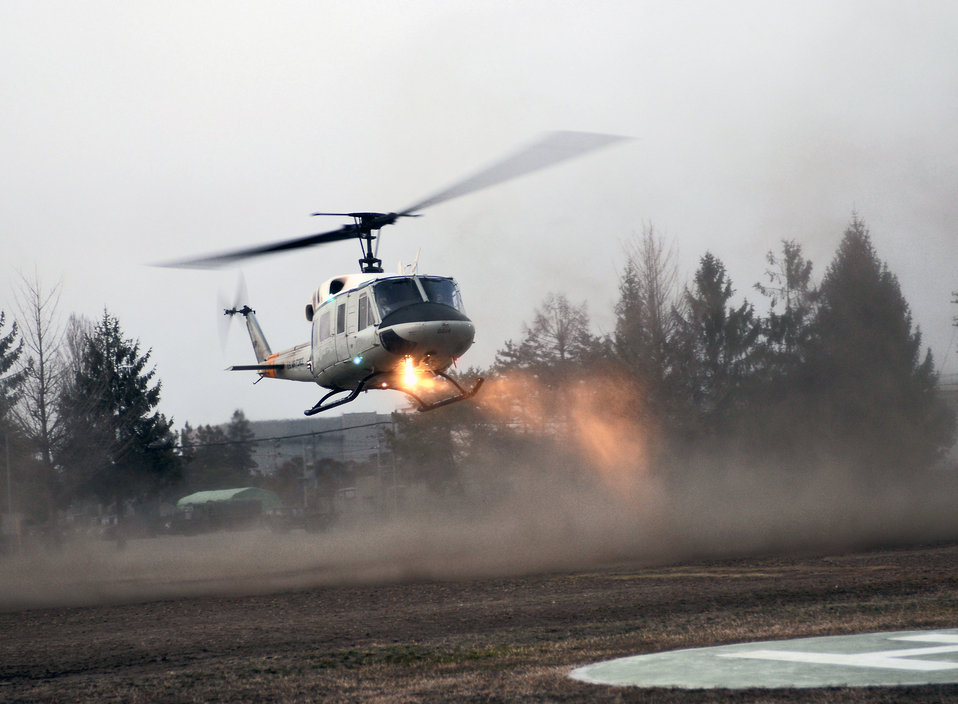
Refueling at Kasuminome

UH-1N Iroquois helicopter drops off search and rescue members at Kasuminome Airfield March 13. UH-1N helicopters at Yokota Air Base normally provide base leadership fast and efficient means of transit to meetings and events in downtown Tokyo, but are currently being used to shuttle disaster relief personnel to locations along Japan?s East Coast.